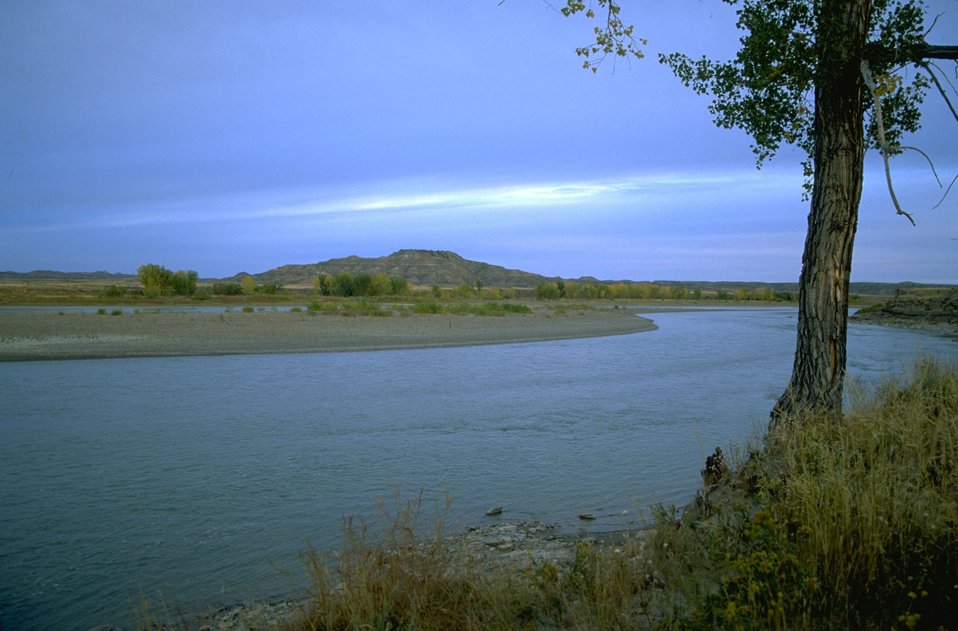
Sheridan Butte - Terry Badlands Wilderness Study Area